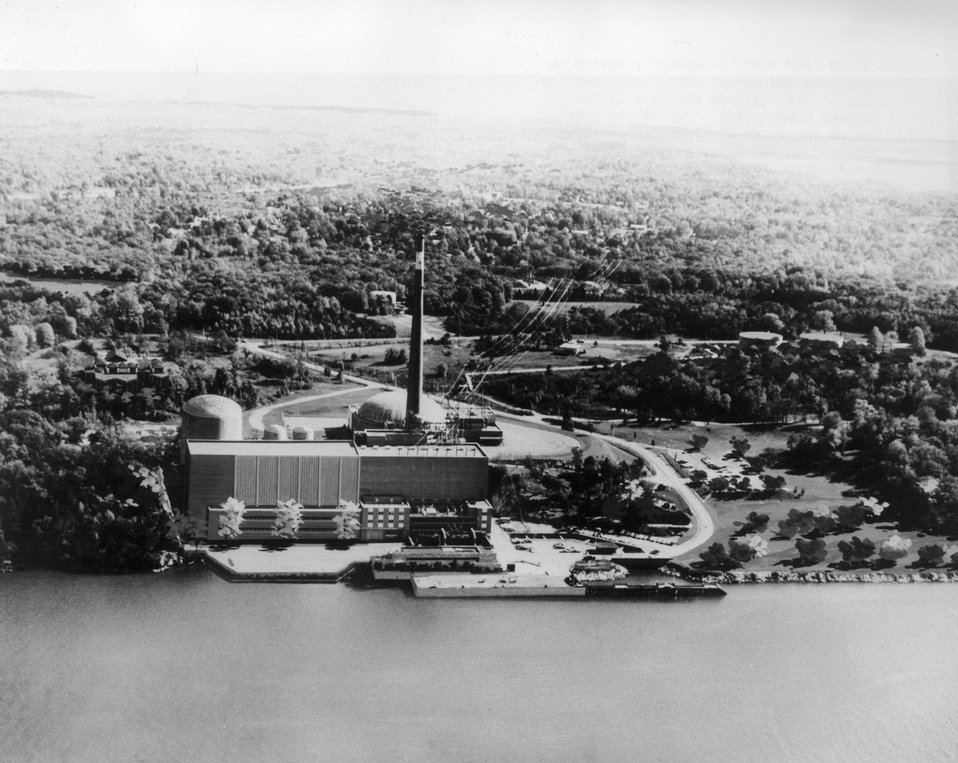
Artist's sketch to left represents the second unit, now under construction, of Consolidated Edison's Indian Point nuclear power plant. Circa 1967.